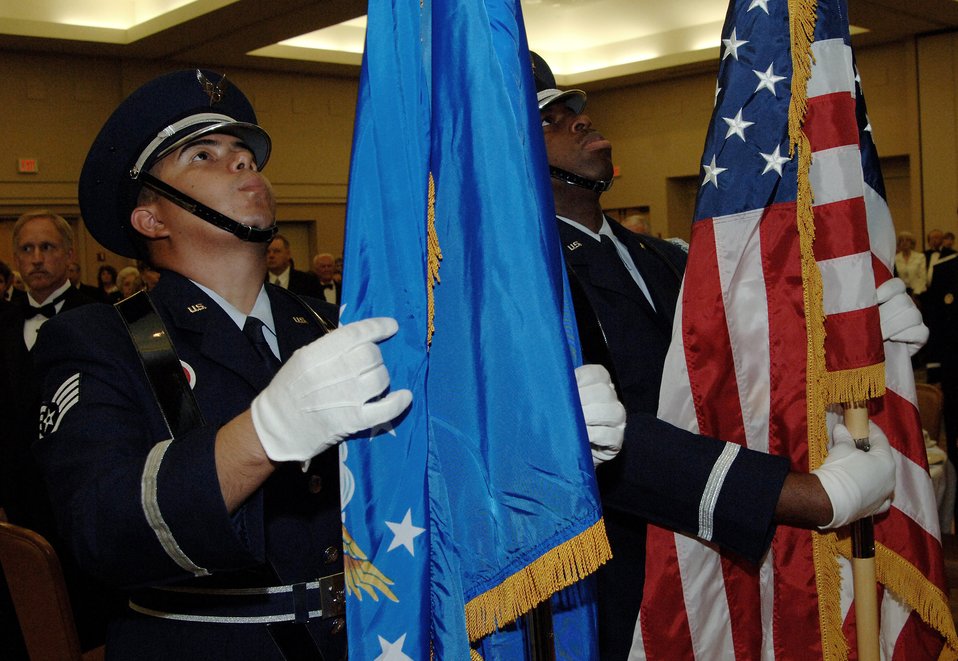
Honoring Air Force Villages

Staff Sgt. Rueben Moralez Jr., left, and Tech. Sgt, Ronrico Pace post the colors at the Air Force Villages dinner Oct. 20, 2006 at Lackland Air Force Base, Texas. Air Force Chief of Staff General T. Michael Moseley spoke at the event. The Villages offer premier active living communities for retired and honorably seperated officers and their spouses, widows and widowers over the age of 62.